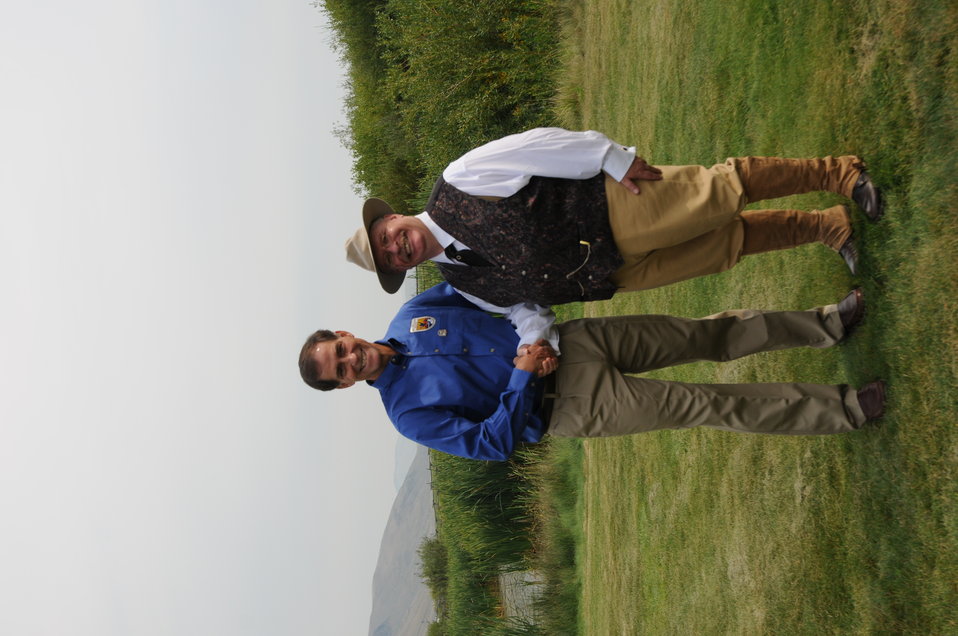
Dan Ashe Meets Theodore Roosevelt

Dan Ashe and Theodore Roosevelt impersonator Case Hicks posed for a shot before the National Elk Refuge's centennial ceremony on August 10. Both Ashe and 'Roosevelt' were speakers at the event.